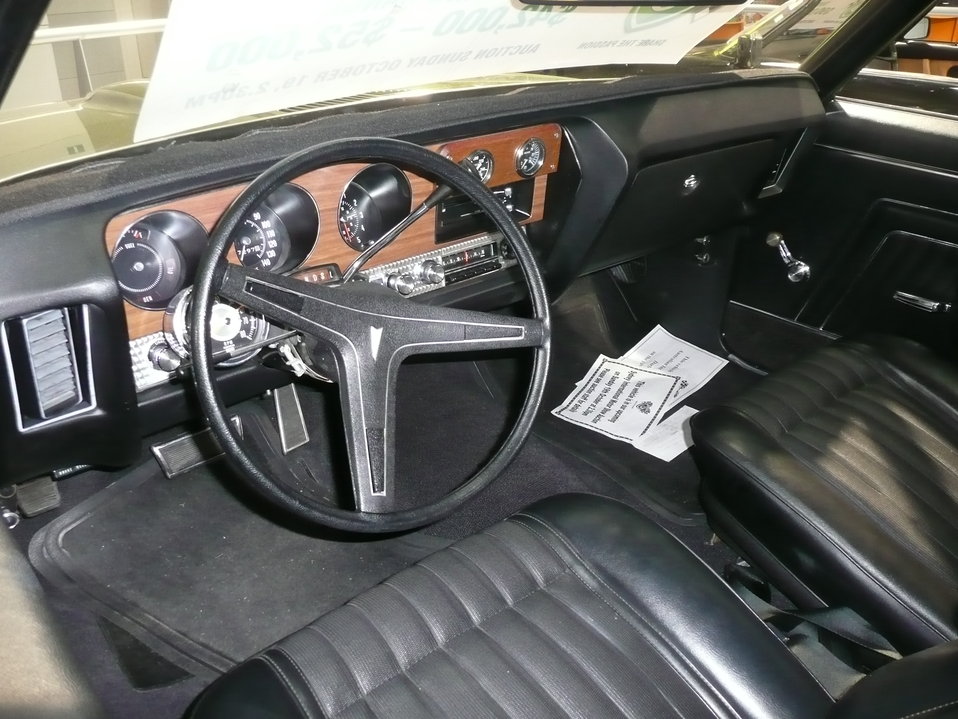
1970 Pontiac GTO 400 CI coupe, photographed at the 2008 Australian International Motor Show, Darling Harbour, New South Wales, Australia.